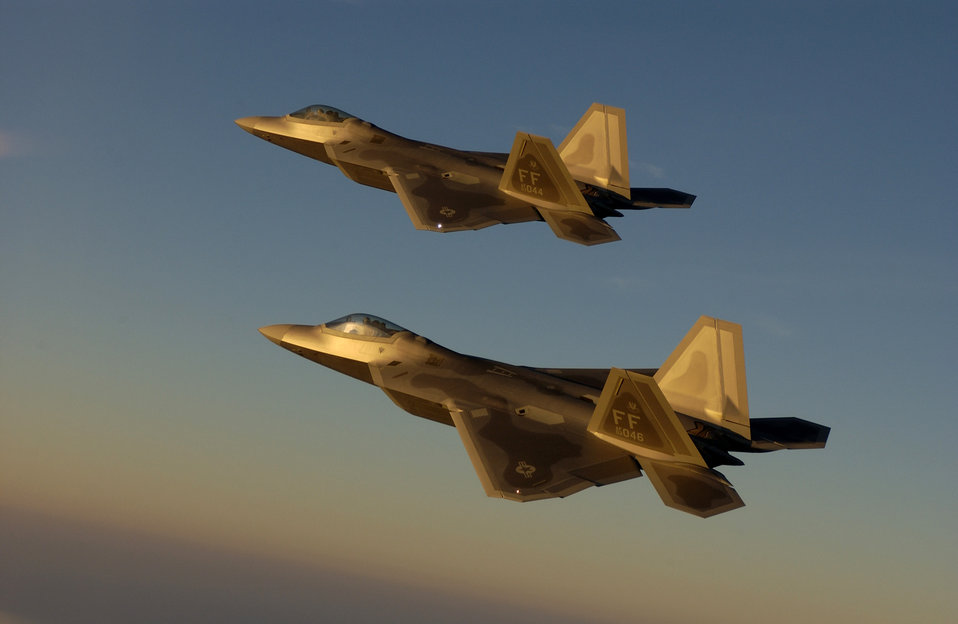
Air power purchasing process continues to improve

Working alongside the manufacturer, Lockheed Martin Aeronautics Company, during production of the F-22 Raptor, Air Combat Command's Raptor Acceptance Team is a geographically separated unit whose mission is to provide gaining units with